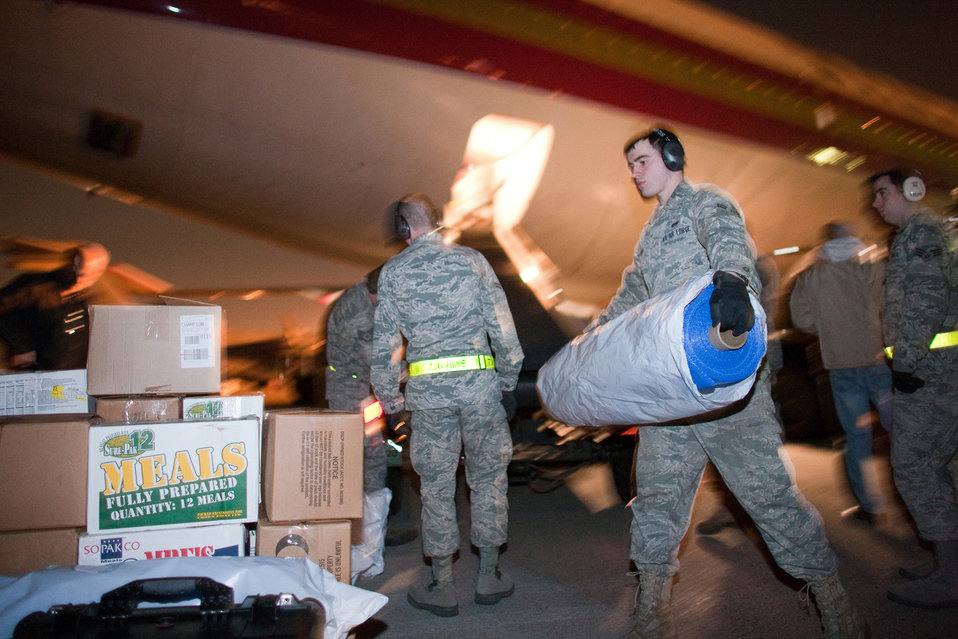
Delivery supplies arrive at Yokota

YOKOTA AIR BASE, Japan -- Airman 1st Class Justin Smith, 730th Air Mobility Squadron, unloads relief supplies here March 19. An international charter aircraft delivered 95 tons of blankets, plastic sheeting, hygiene supplies, soap and jerry cans to assist with earthquake and tsunami relief efforts.